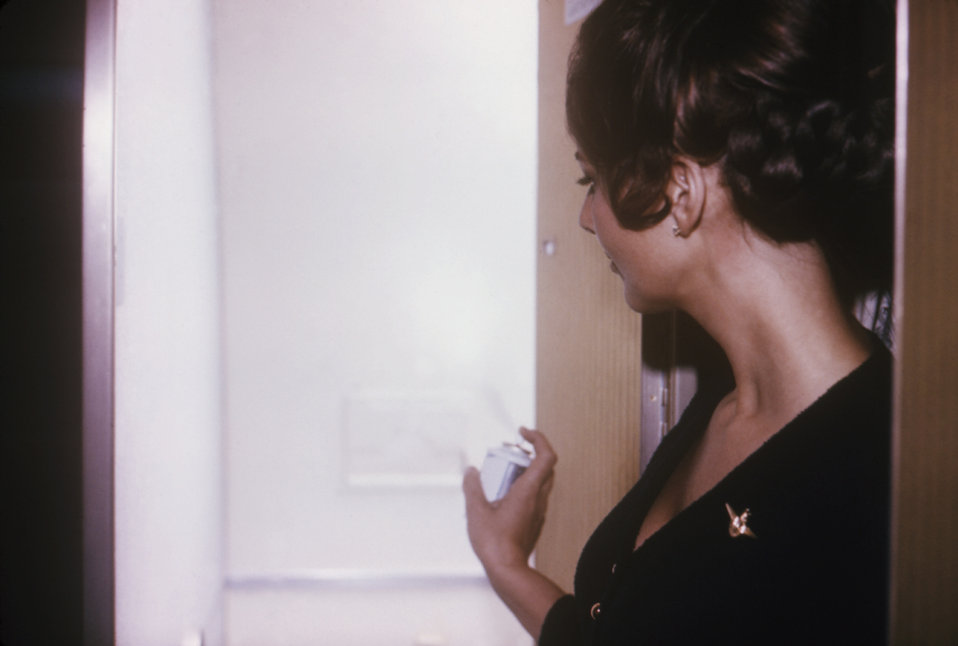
This is a 1971 photograph showing an airline employee spraying inside an aircraft with an aerosol pesticides spray.